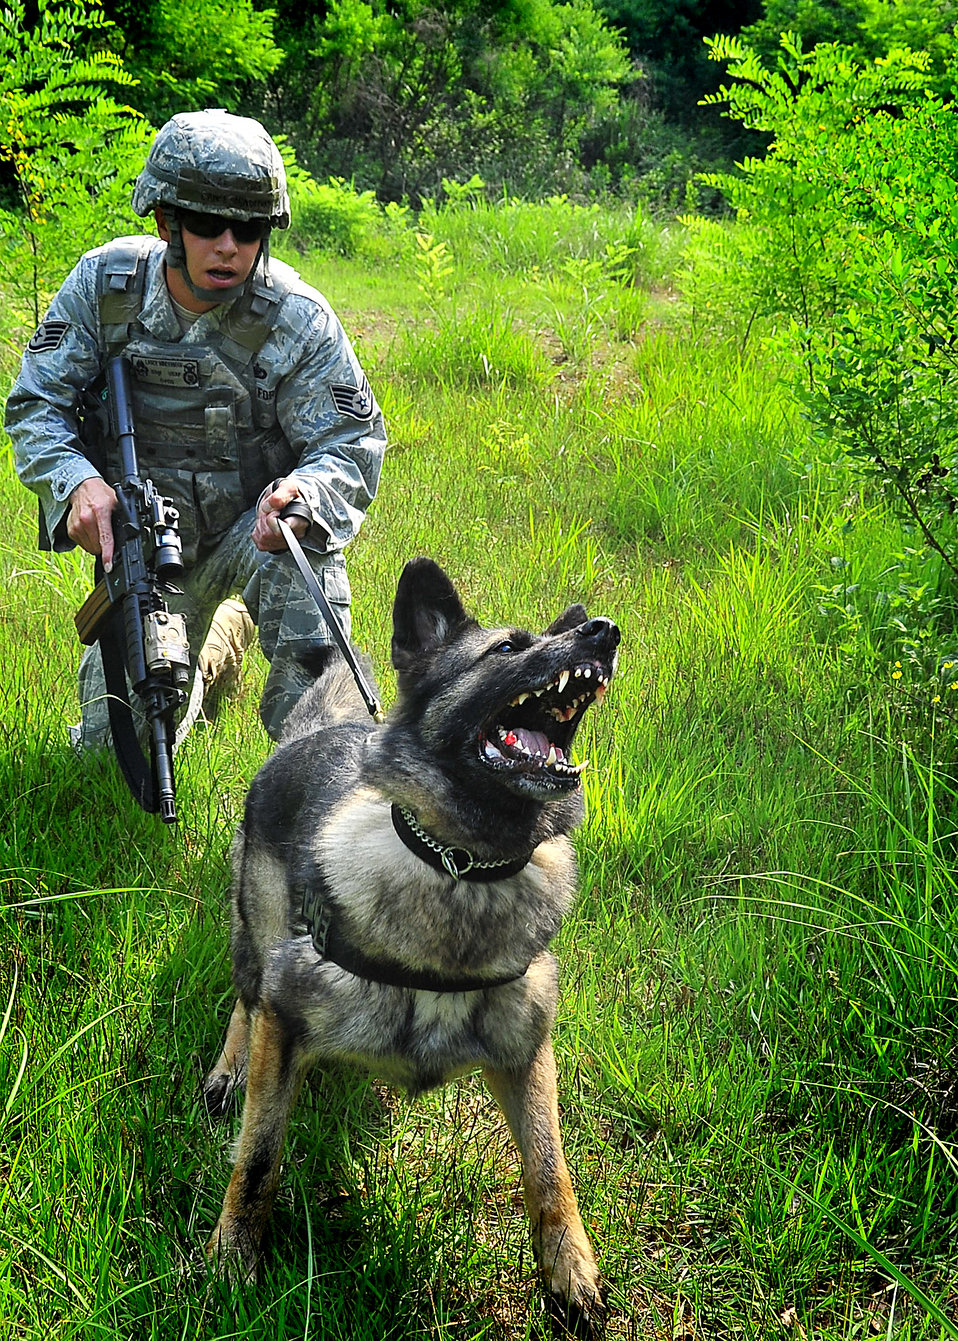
Want a piece of me?

A military working dog and its handler participate in training June 20, 2011, at Osan Air Base, South Korea.